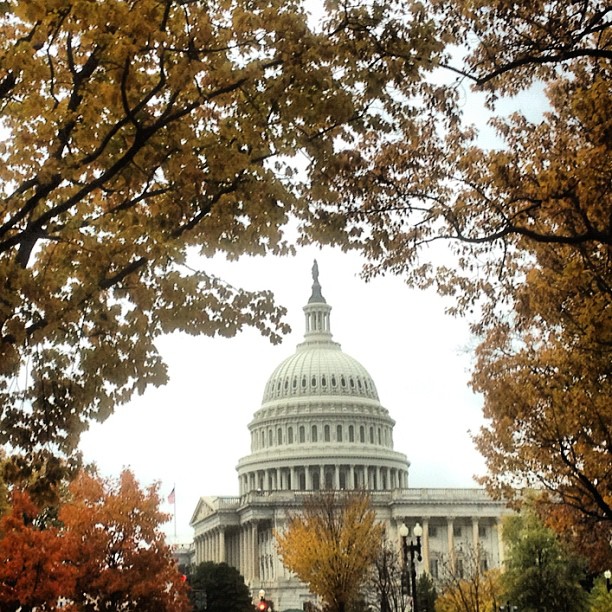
Welcome back #Congress on a rainy Tuesday in #dc.